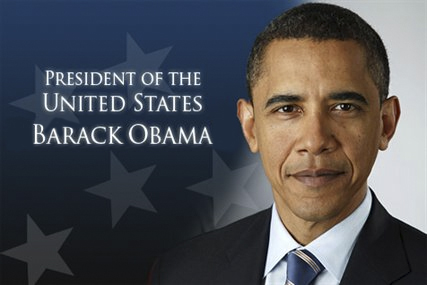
President Barack Obama

President of the United States Barack Obama.